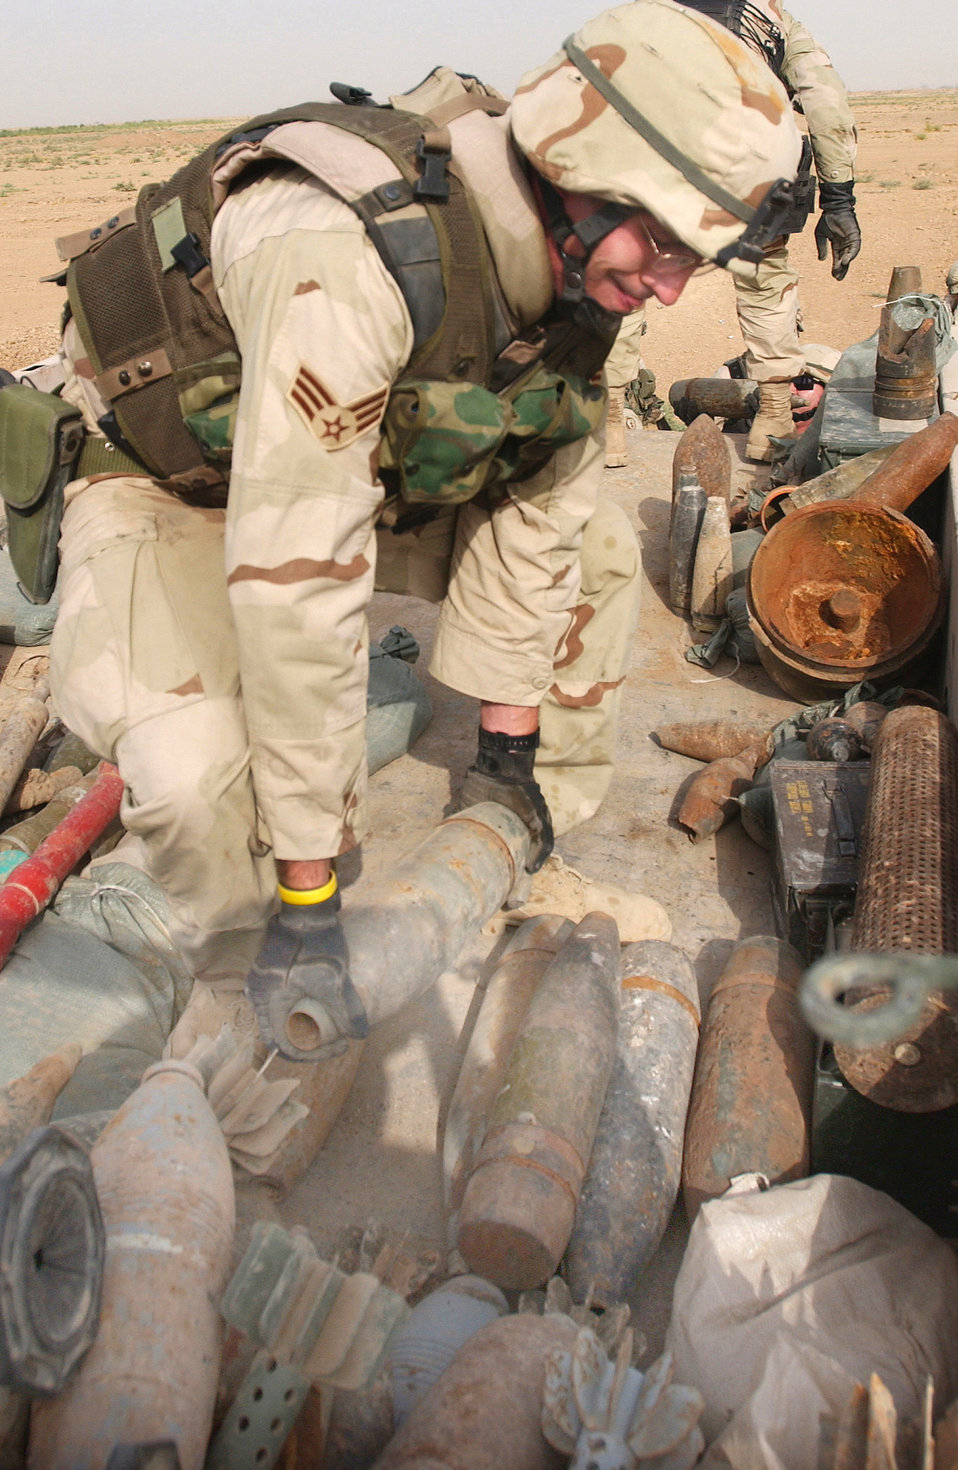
Operation Iraqi Freedom

KIRKUK AIR BASE, Iraq -- Senior Airman Randall Peterson attaches C4 explosives to a stack of live munitions. Munitions were found throughout the Kirkuk region and destroyed by explosive ordnance disposal Airmen. Airman Dighiera is deployed from Spangdahlem Air Base, Germany. He is assigned to the 506th Civil Engineer Squadron here.